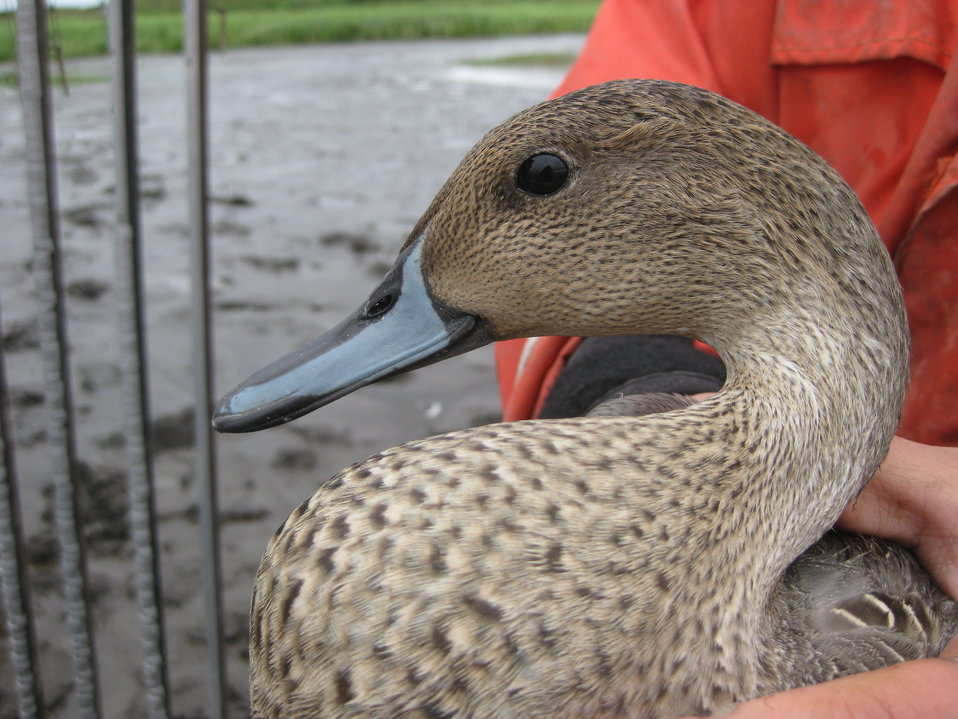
Adult Male Pintail

Banded adult male pintail that is ready to be released. Notice the blue and black racer stripe bill that is a main feature in adult males.

USFWS Yukon Delta NWR